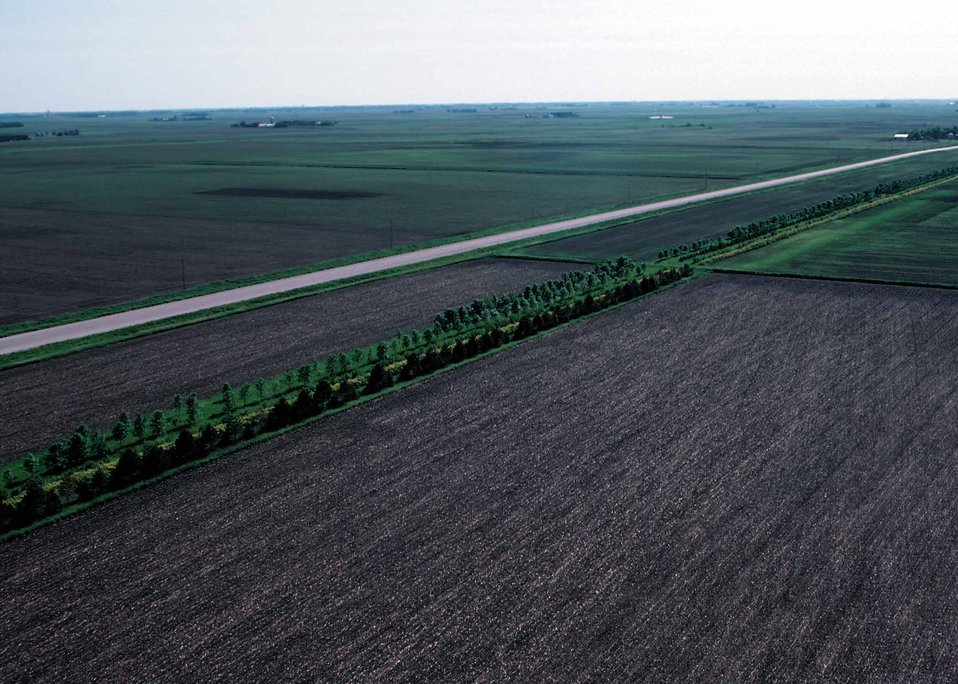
A living snowfence in northwest Iowa slows soil erosion by wind and keeps the highway clear of snow.